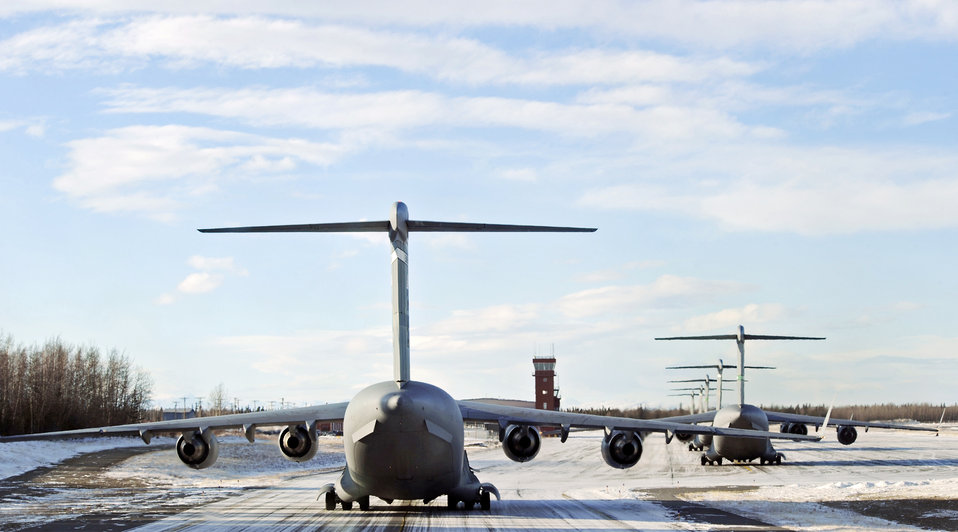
C-17s participate in Pacific Rendezvous

A C-17 Globemaster III waits to take off at Fort Greely, Alaska, Feb. 10, 2010, during Exercise Pacific Rendezvous. The aircraft was participating in an exercise that involved C-17s from Pacific Air Forces and Air Mobility Command exploring capabilities in large formations.